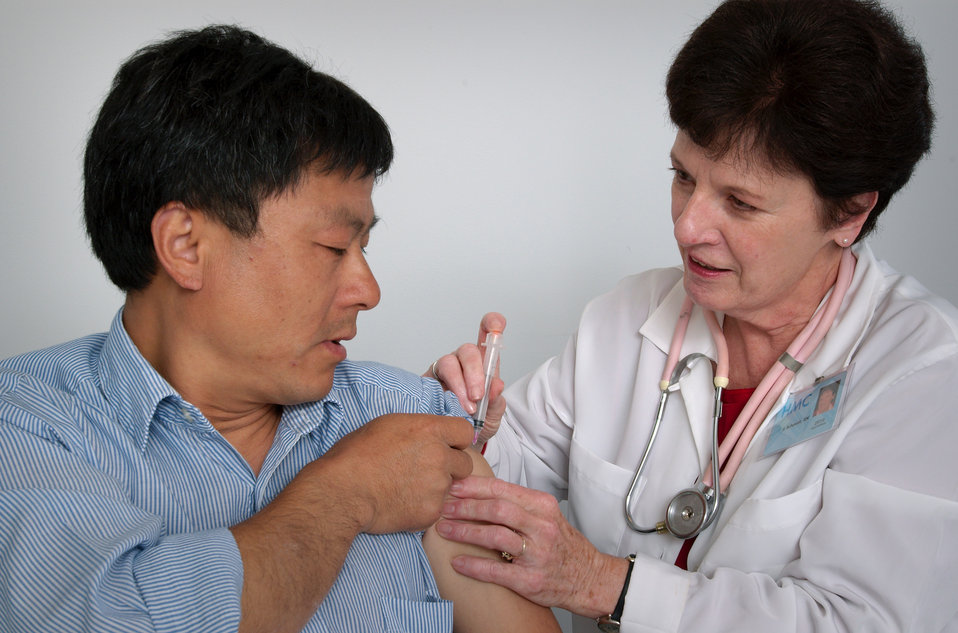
Depicted in this 2006 image, this man was receiving an intramuscular immunization in his left shoulder muscle. He was facilitating the procedure by lifting up his sleeve, while the nurse admistered the vaccine. With her free hand, the nurse stabilized the injection site.